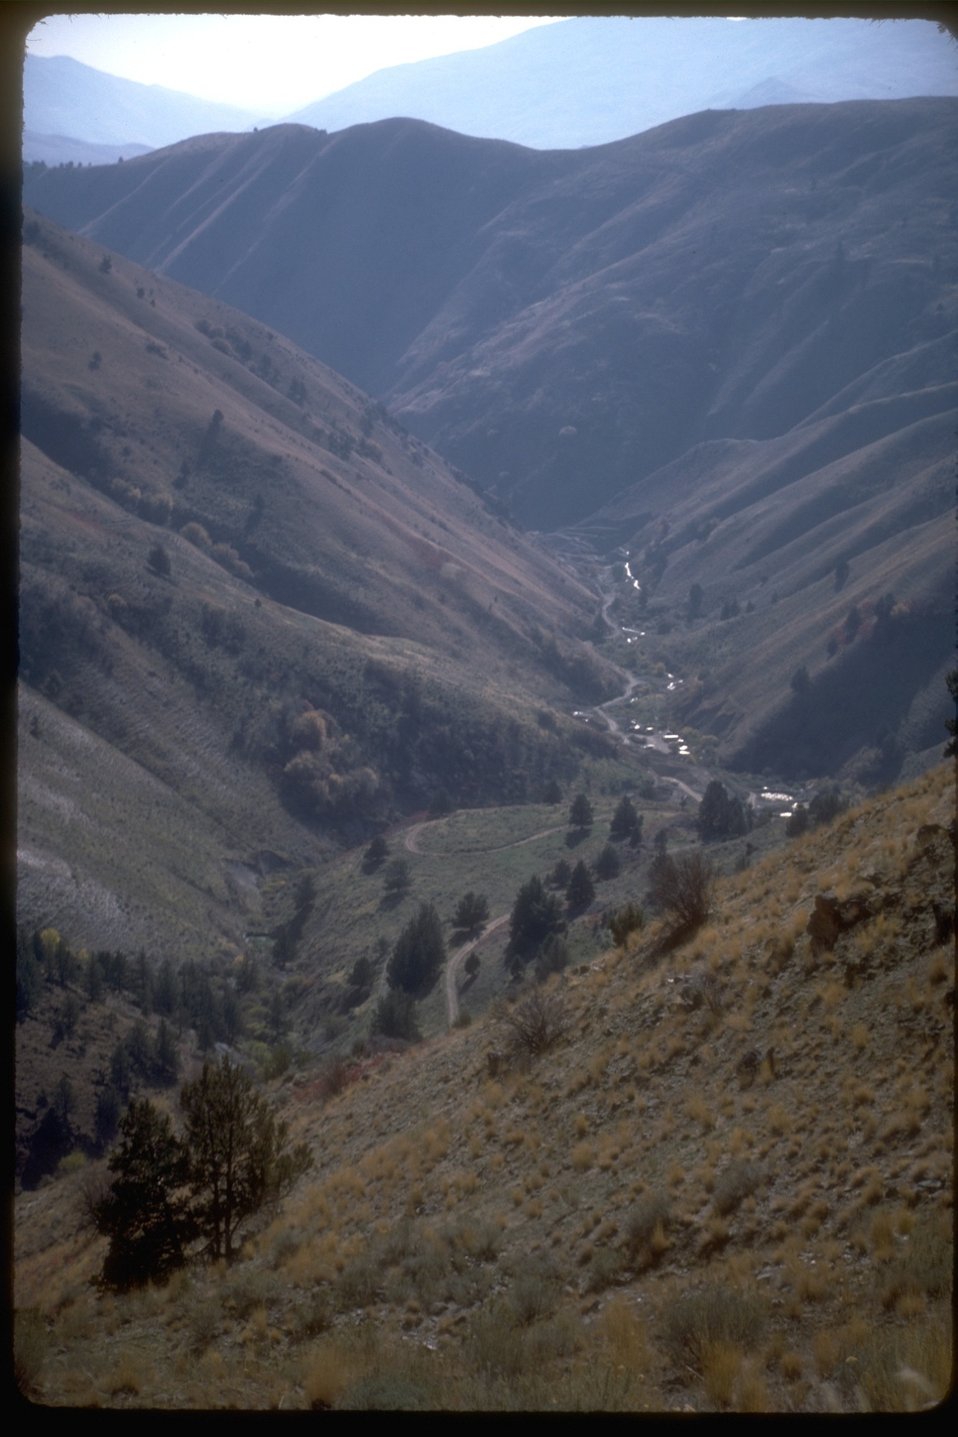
Canyon going up to Lookout Mountain.